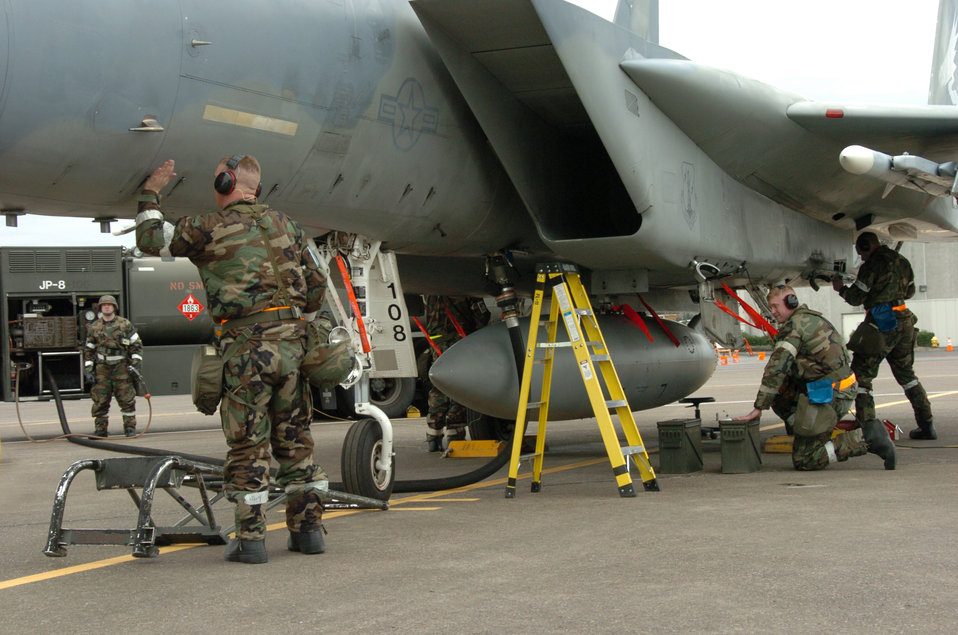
Checking her over

Airmen from the 142nd Fighter Wing begin post-flight procedures Feb. 10 on an F-15 Eagle that had just landed at Portland Air National Guard Base, Oregon.